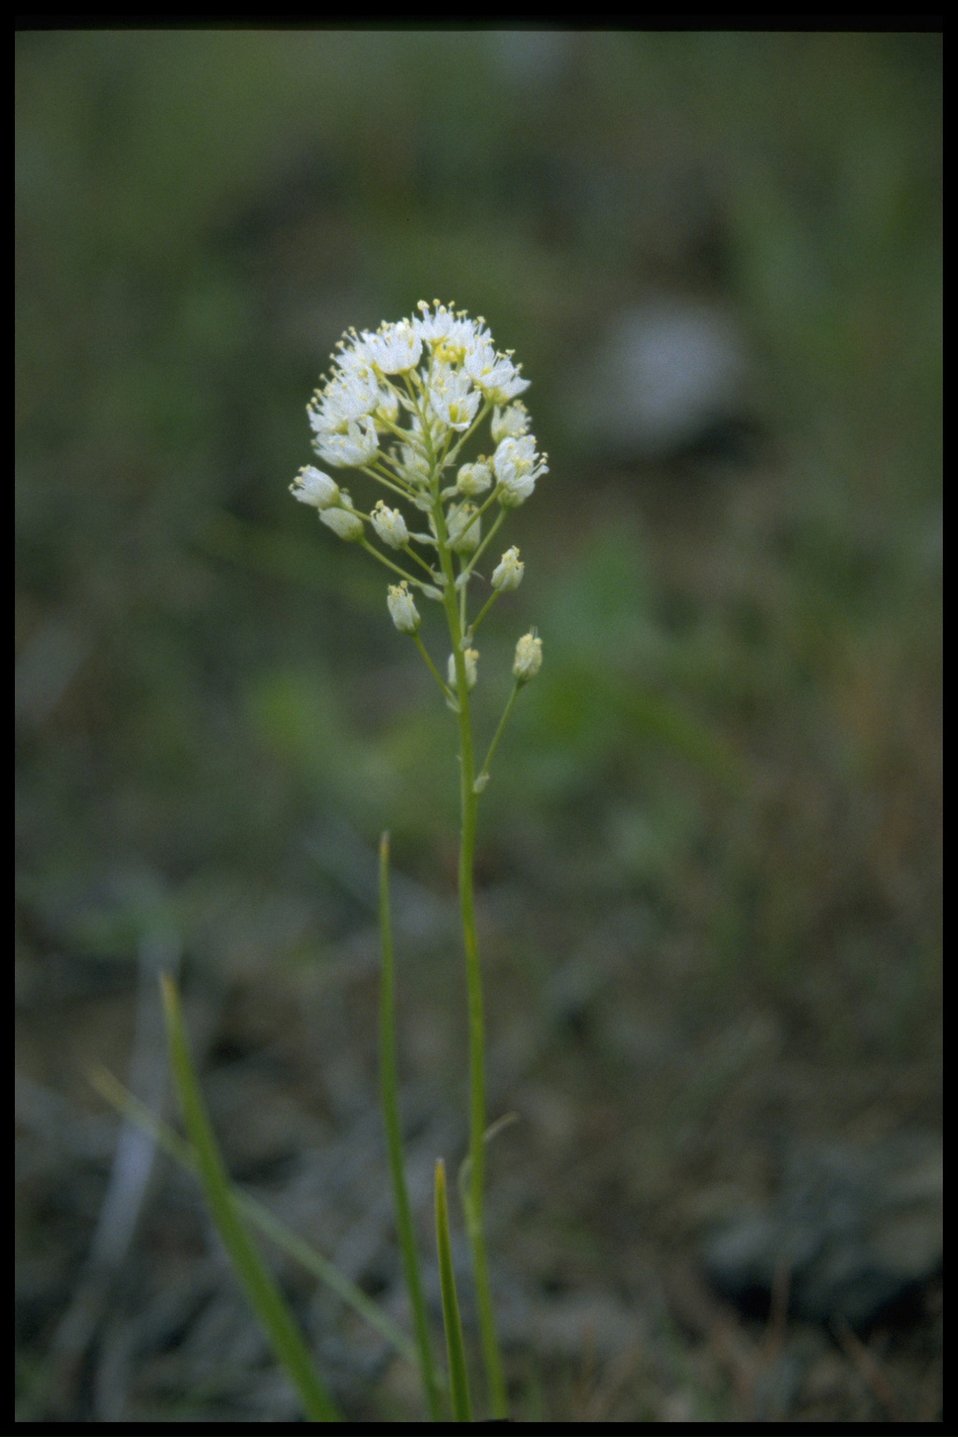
Closeup shot of Death Camas wildflower.